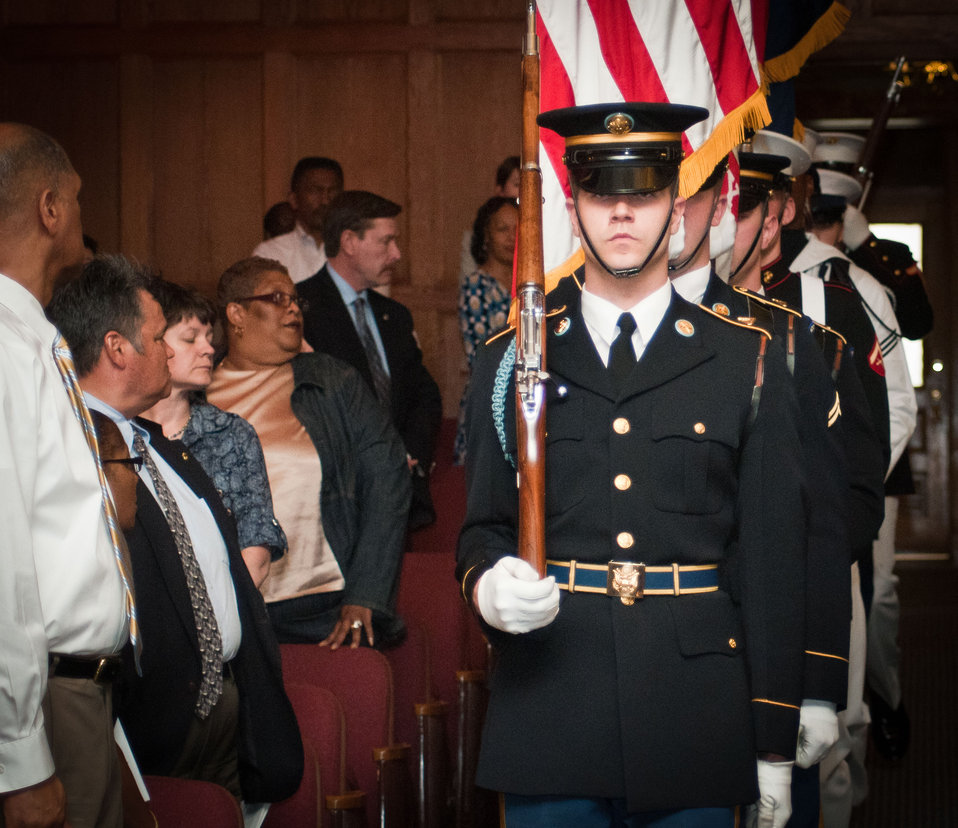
The Joint Armed Forces Color Guard from Military District of Washington presented the colors during the U.S. Department of Agriculture (USDA) Lesbian, Gay, Bisexual and Transgender (LGBT) Pride Observance Program, on Thursday, June 2, 2011 in the Jefferson Auditorium, Washington, DC.